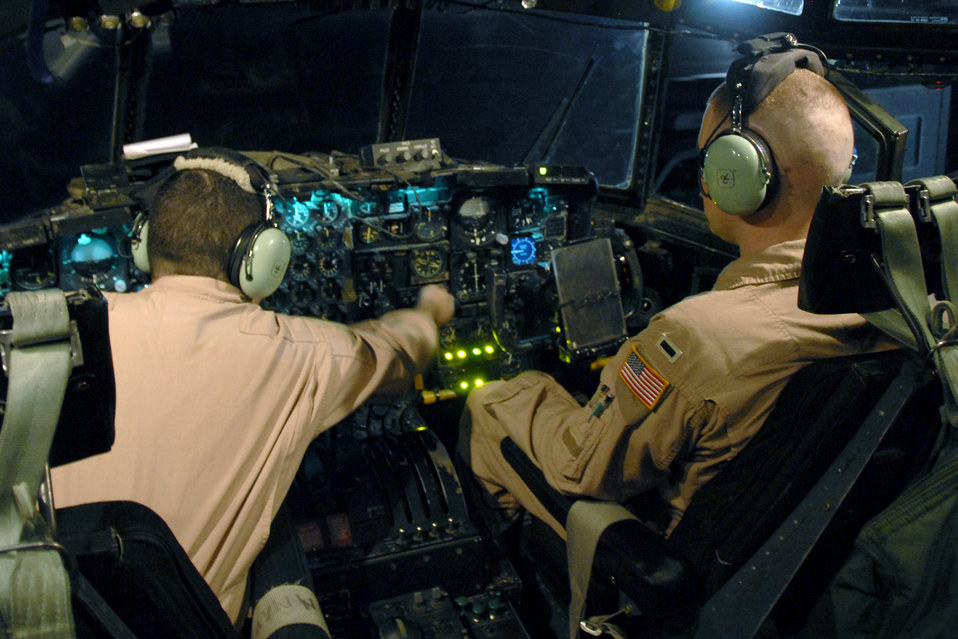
Special delivery

Staff Sgt. James Rice and 1st Lt. Justin Fitzpatrick go through a preflight checklist to ensure all the control and pressure guages are working on the instrument panel prior to a C-130 Hercules departure on a passenger/cargo mission to Iraq May 13. Both Lieutenant Fitzpatrick and Sergeant Rice are deployed from Dyess Air Force Base, Texas. Sergeant Rice is a C-130 Hercules engineer, and Lieutenant Fitzpatrick is a co-pilot with the 737th Expeditionary Airlift Squadron.